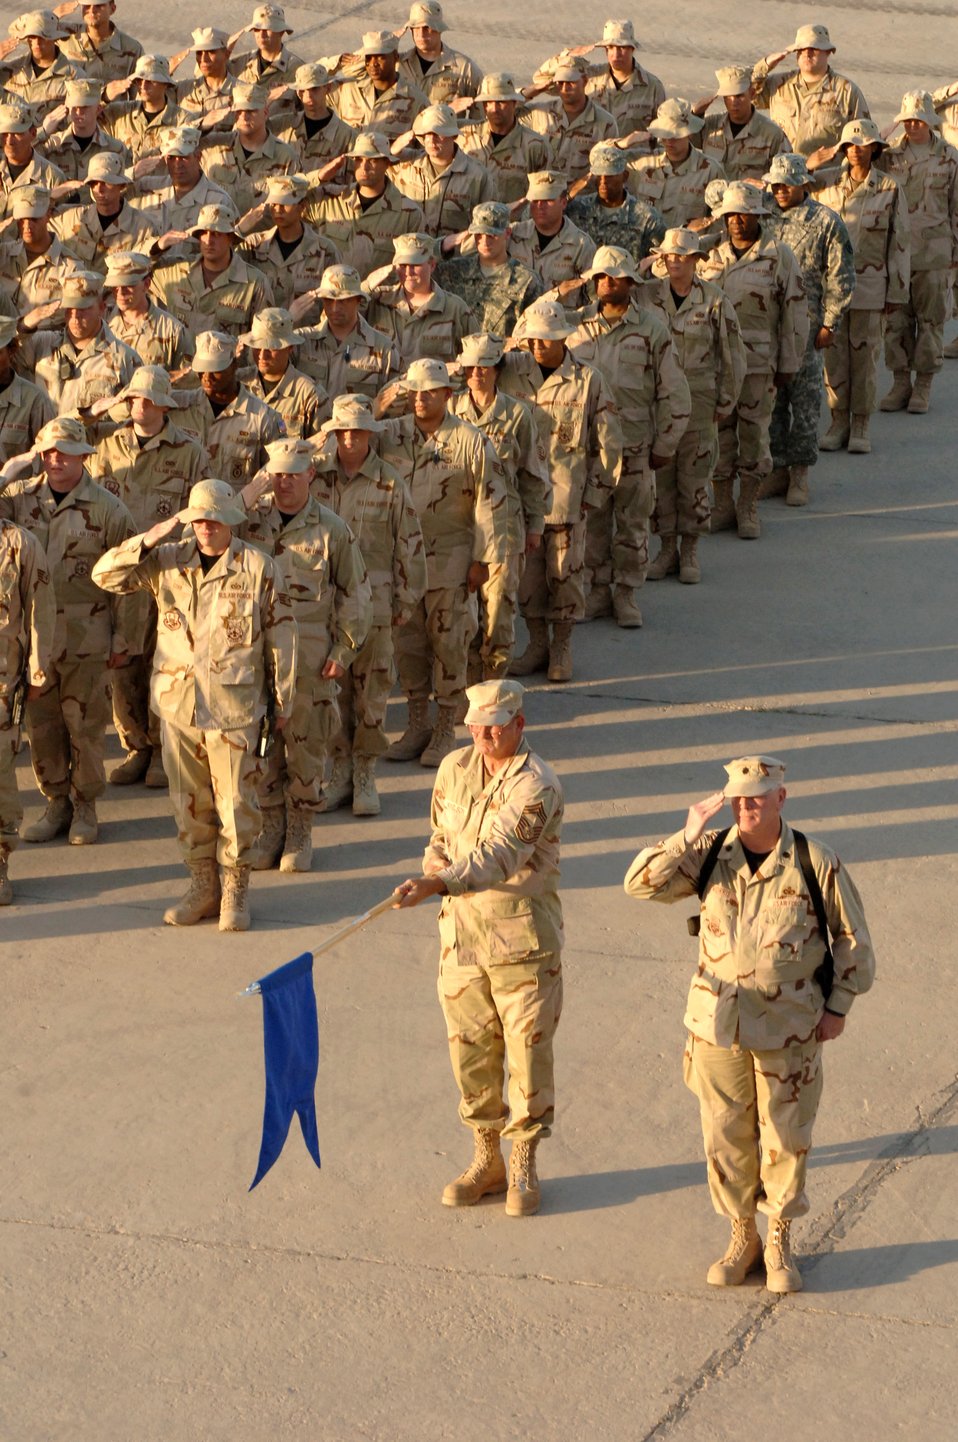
Memorial salute

Airmen and Soldiers render salutes at the 447th Air Expeditionary Group's Memorial Day retreat ceremony at Sather Air Base, Iraq, on Monday, May 29, 2006. The 447th AEG operates the primary aerial port for transient military aircraft entering and exiting Iraq. The base is named in honor of Staff Sgt. Scott Sather, a Clio, Mich., native who was killed in combat in Iraq on April 8, 2003.